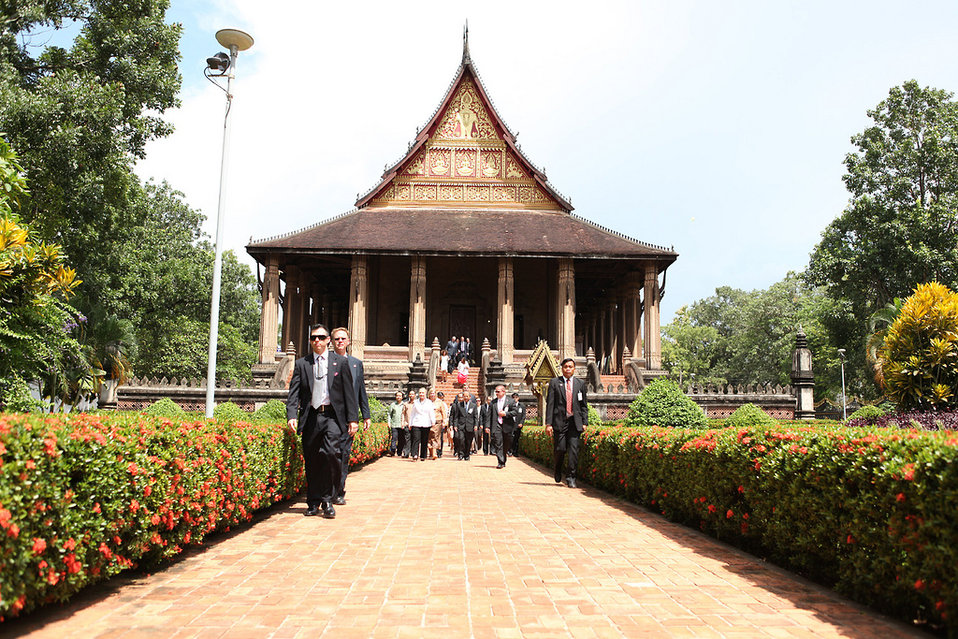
Secretary Clinton Departs the Ho Phra Keo Temple

U.S. Secretary of State Hillary Rodham Clinton departs the Ho Phra Keo Temple in Vientiane, Laos, on July 11, 2012.